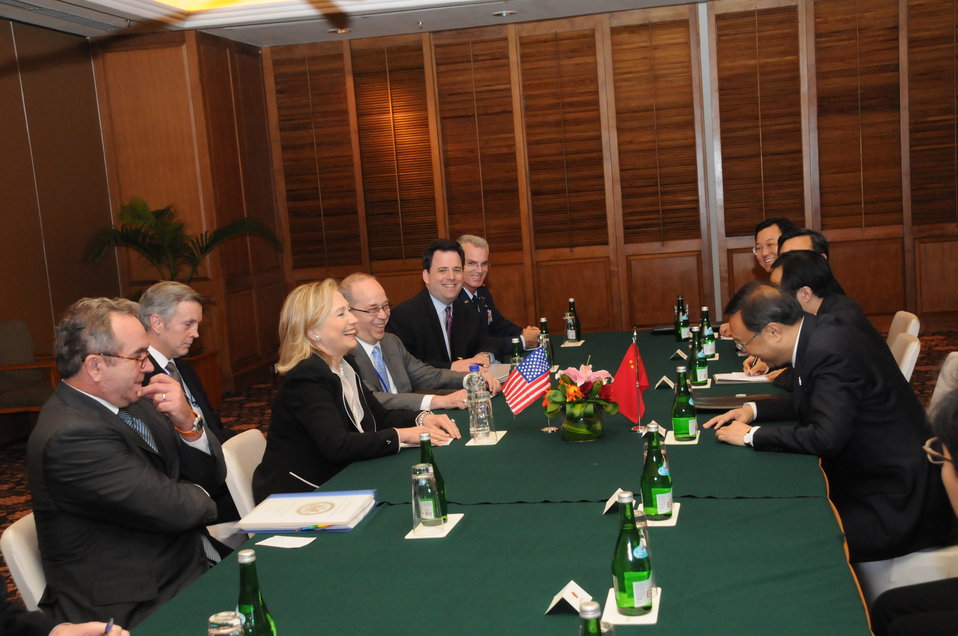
Secretary Clinton Holds a Bilateral Meeting With Chinese Foreign Minister Yang Jiechi

U.S. Secretary of State Hillary Rodham Clinton holds a bilateral meeting with Chinese Foreign Minister Yang Jiechi in Bali, Indonesia, on July 22, 2011. Seated on the left side, left to right, are: U.S. Assistant Secretary of State for East Asian and Pacific Affairs Kurt Campbell, U.S. Secretary of State Hillary Rodham Clinton, U.S. National Security Council Director for Asian Affairs Daniel Russel, U.S. Assistant Secretary of State for Political-Military Affairs Andrew Shapiro, and General Paul Selva. Seated on the right side are: Chinese Foreign Minister Yang Jiechi, Interpreter Sun Ning; Chinese Assistant Minister of Foreign Affairs Liu Zhenmin, and Chinese Deputy Chief of Mission Xie Feng.